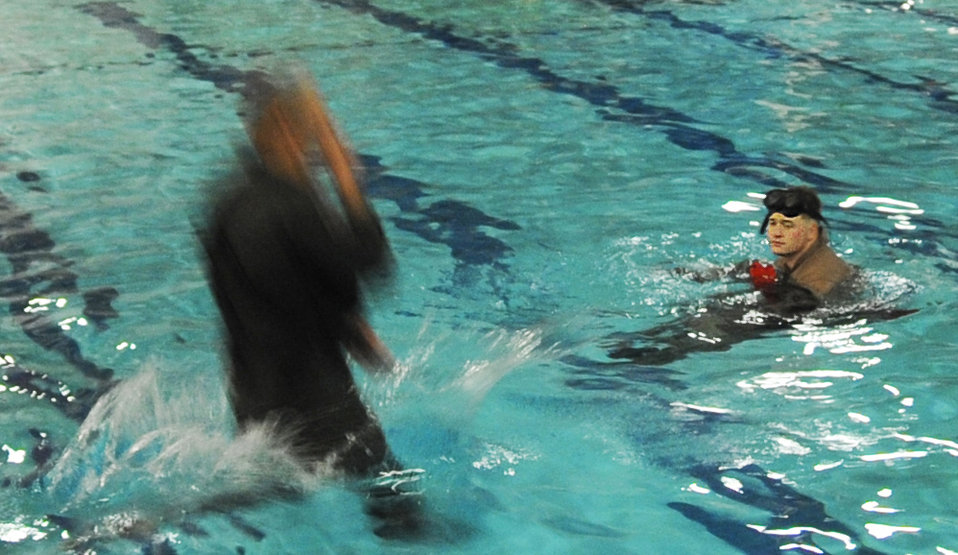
Water survival course moves from Florida to Fairchild

Senior Airman Parker Hudson (right), oversees water survival training in the base pool June 9, 2010 at Fairchild Air Force Base, Wash. Airman Hudson is an instructor with the 22nd Training Squadron. Water survival courses were relocated to Fairchild AFB when oil was discovered in the Gulf of Mexico training area.